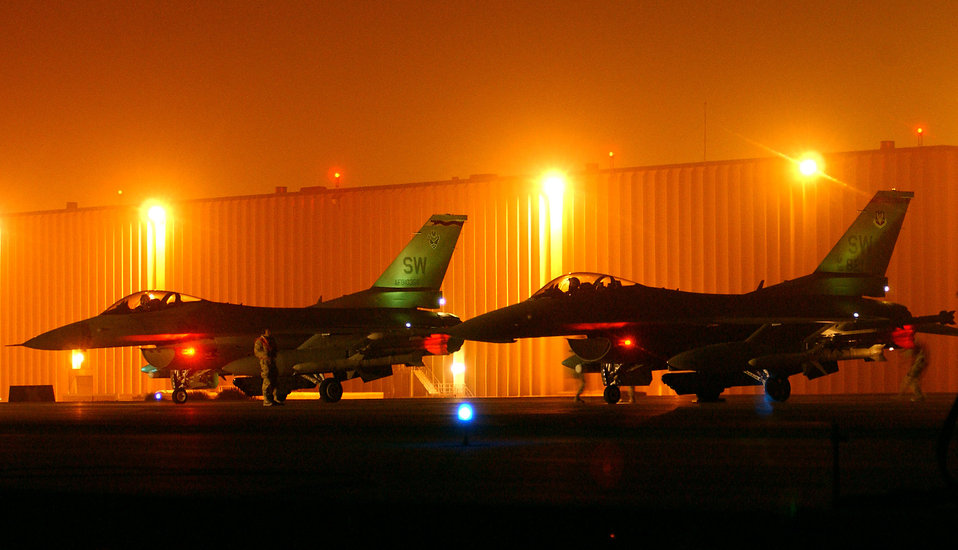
Hot ramp

OPERATION IRAQI FREEDOM -- F-16 Fighting Falcons wait on the